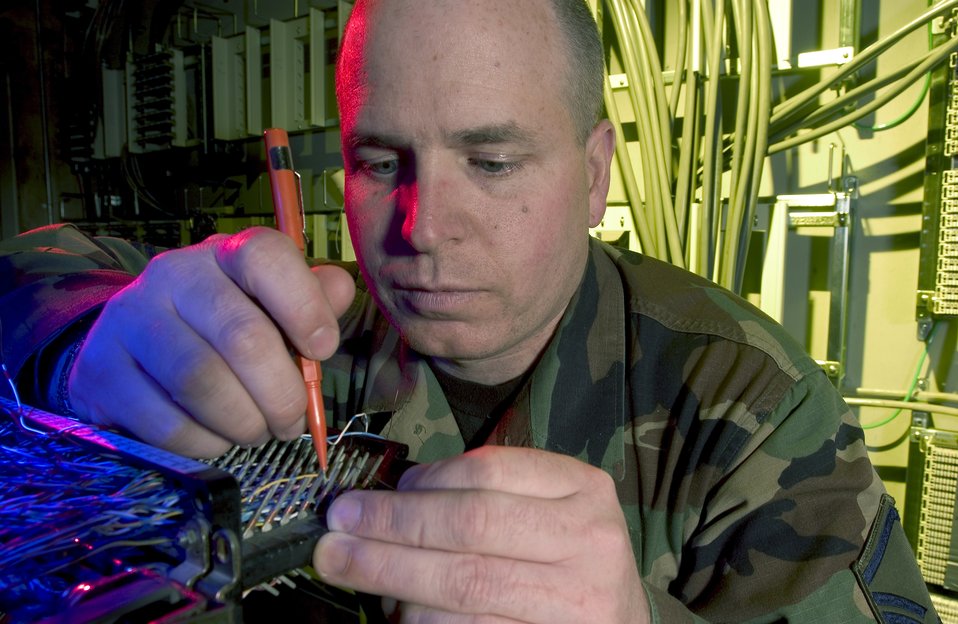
Down to the wire

SOUTH BURLINGTON, Vt. -- Master Sgt. Greg Reynolds wraps copper wire on the base main telephone distribution frame. He is a switching systems technician assigned to Vermont Air National Guard's 158th Communications Flight.